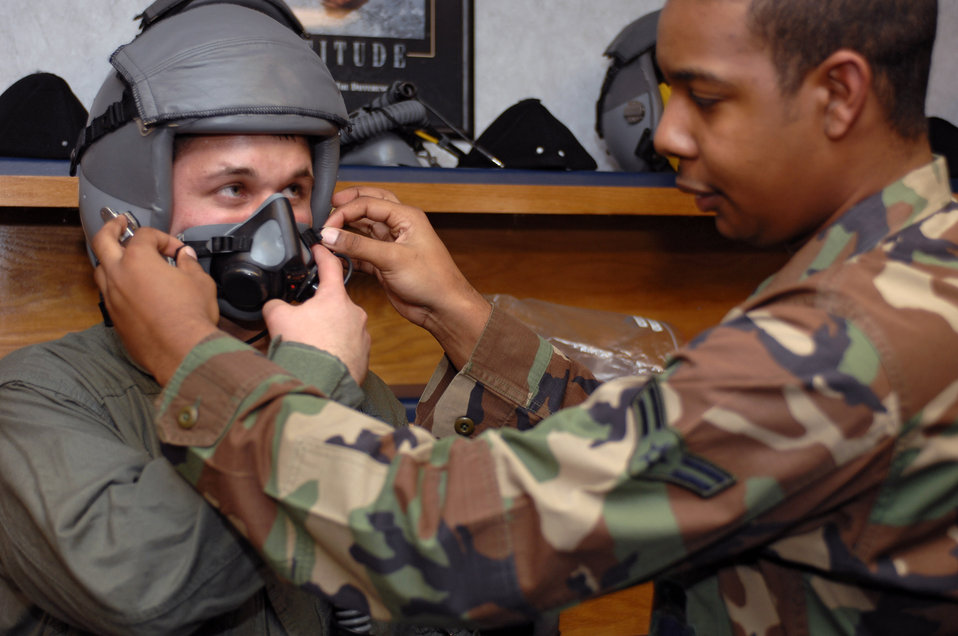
NASCAR driver gets flight of his life

Airman 1st Class Dominique Robinson ensures the proper fit of an oxygen mask on Reed Sorenson Jan. 22 at Tyndall Air Force Base, Fla. Mr. Sorenson, driver of Air Force sponsored No. 43 NASCAR, and his crew chief, Mike Shiplett, were at the base for incentive rides in an F-15 Eagle. Airman Robinson is a life support technician from the 95th Fighter Squadron at Tyndall AFB.